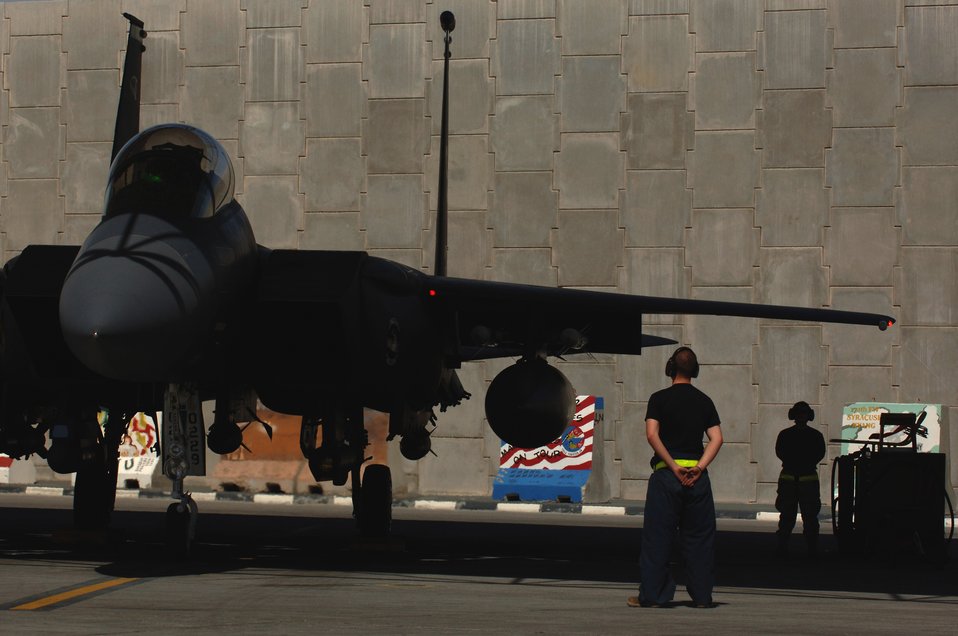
Strike Eagles ready to strike

An F-15E Strike Eagle from the 336th Expeditionary Fighter Squadron prepares for takeoff Wednesday, March 8, 2006, at a deployed location in Southwest Asia. The 336th is home-based at Seymour Johnson Air Force Base, N.C.